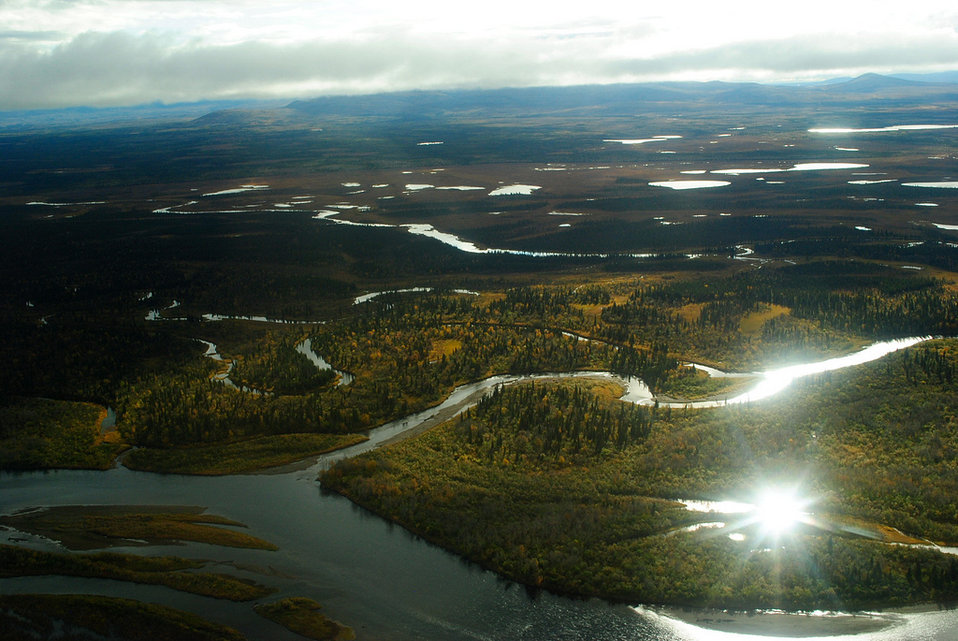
September 27, 2011 The Mulchatna River

The Mulchatna River lies at the heart of the Nushagak watershed.
All five Pacific salmon species spawn in the Mulchatna and it's tributaries - which include the Koktuli and Stuyahok Rivers.

Visit www.epa.gov/bristolbay for more information about EPA's Bristol Bay Watershed Assessment